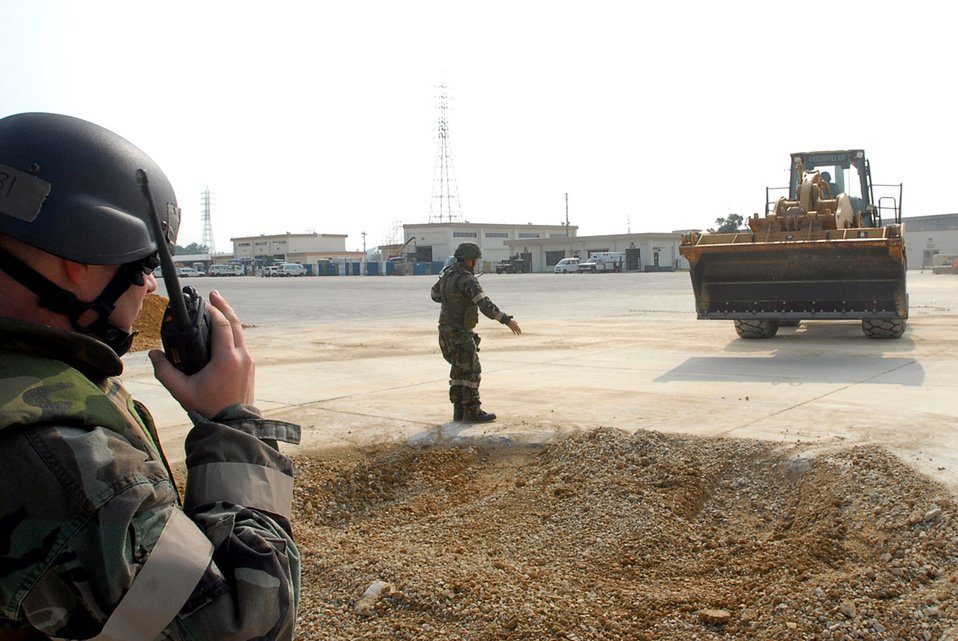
Airmen practice runway repair, RAAF airmen observe, take ideas home

Tech. Sgt. Tony Aquilano, 36th Civil Engineer Squadron, radios the control center about progress of repairing holes in an airfield in the training area at Kadena Air Base, Japan, Nov. 16. Approximately 110 personnel, most from Andersen Air Force Base, Guam, attended the Det. 1, 554th Rapid Engineer Deployable Heavy Operational Repair Squadron Engineer Silver Flag exercise here.